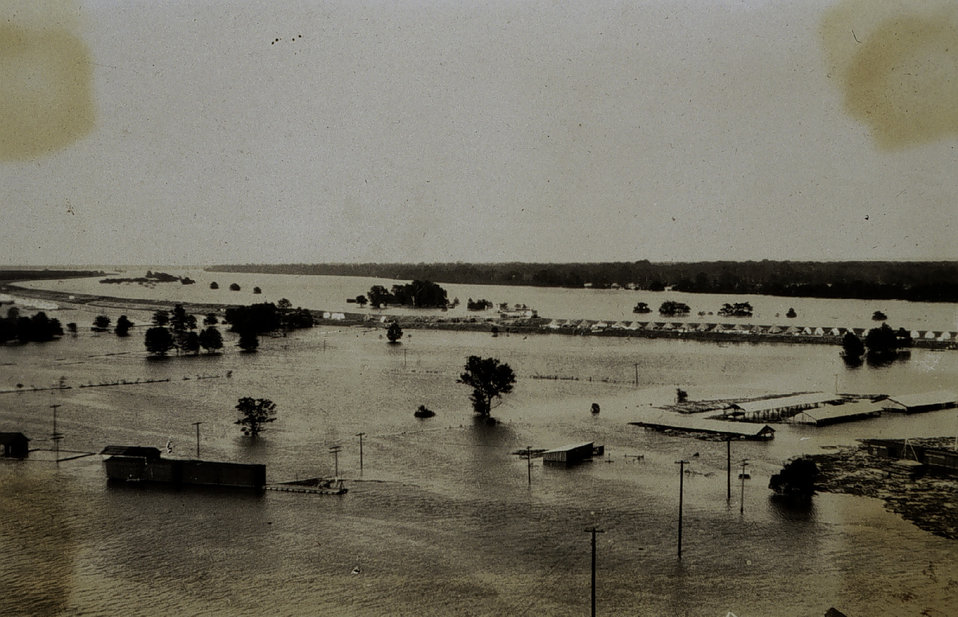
The great Mississippi River flood of 1927. Tent camp of refugees on river levee